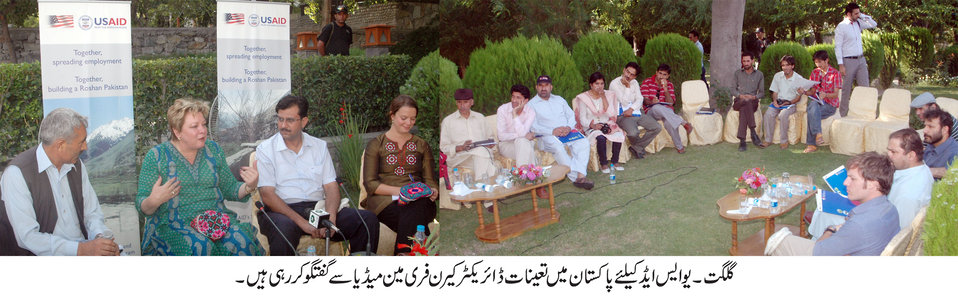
Deputy Director Karen Freeman’s visit to Gilgit Library

Karen Freeman visited the Municipal Gilgit Library on Monday, July 9. She was accompanied by other USAID staff and the staff from the Ambassador’s Fund Program. A the library, she met with Deputy Commissioner of Gilgit, Mr. Arqam and library staff, toured a photo display, and had an informal discussion with the library staff and community members about the USAID-funded project. Library staff showed the equipment funded by USAID (computers, internet, scanners, etc). The visit concluded by a Q & A session with media.